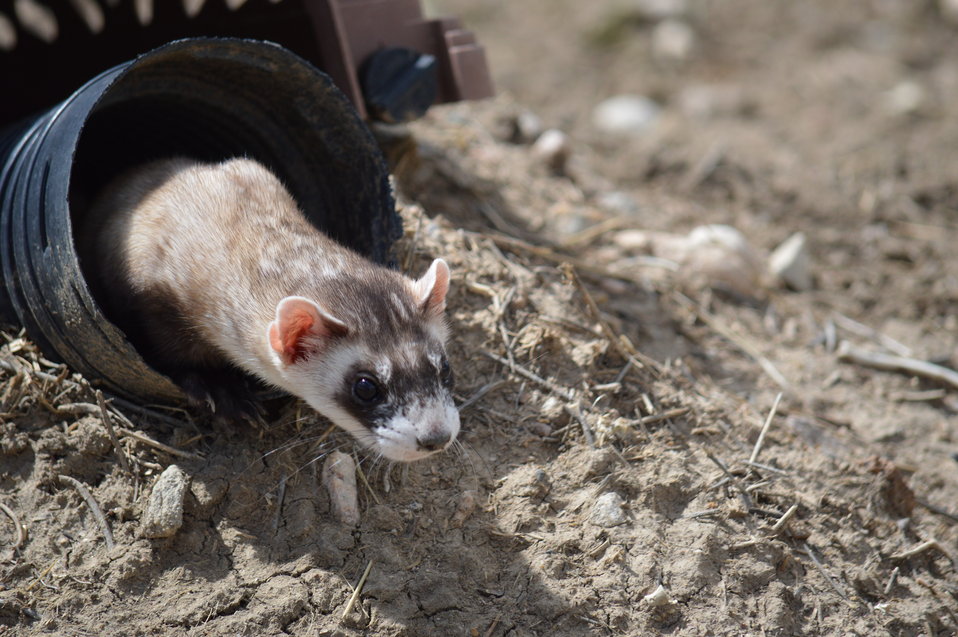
Interns visit the NBFFCC

In the summer of 2012, USFWS Region 6 interns visited the National Black-footed Ferret Conservation Center (NBFFCC) in Colorado to learn how the program reintroduces the endangered Black-footed ferret back into its native habitat.